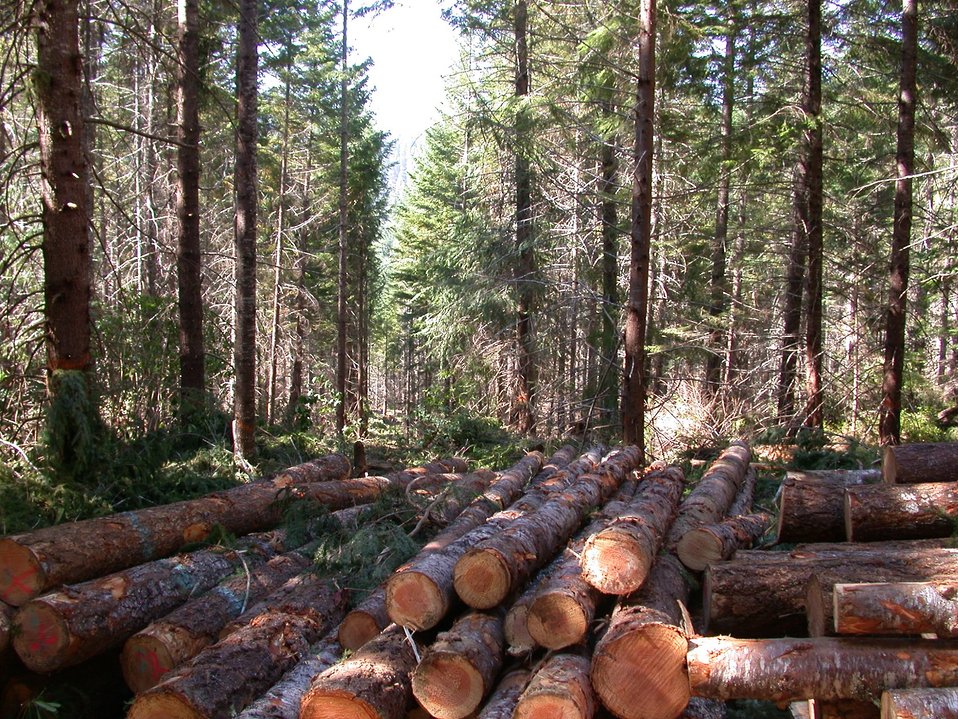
Camas East Timber Sale in Late Successional Reserve.